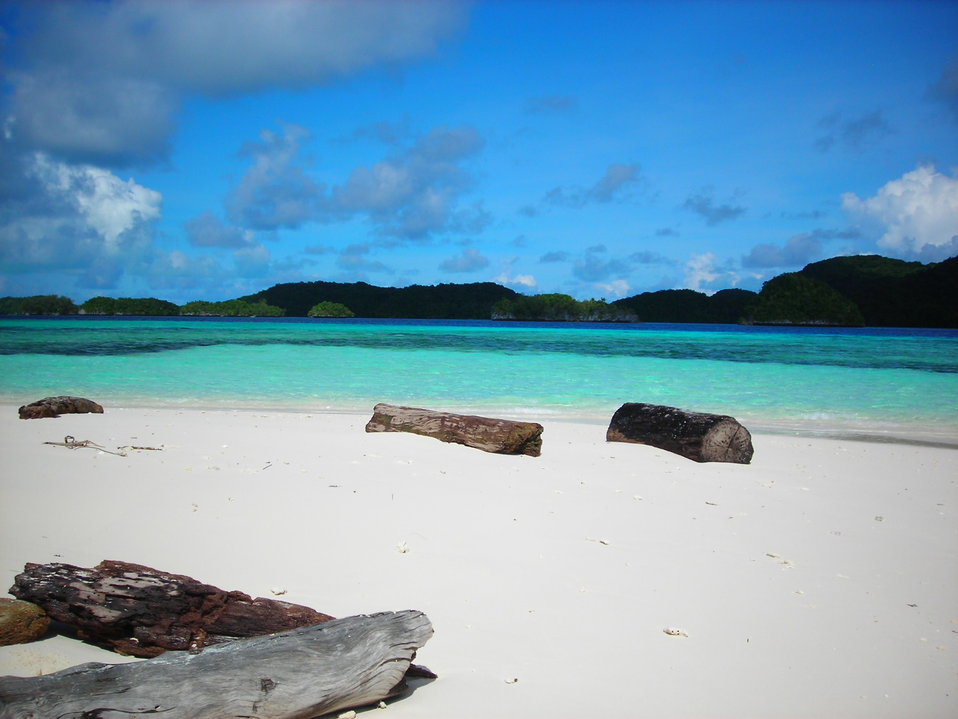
Uploaded by request of Peter Buekea

Taken in Rock Islands, Palau, Micronesia

A typical Monday BBQ. This picture was taken during my internship with the Palau Division of Environmental Health, where we spent the day monitoring rat traps...and enjoying the sun.